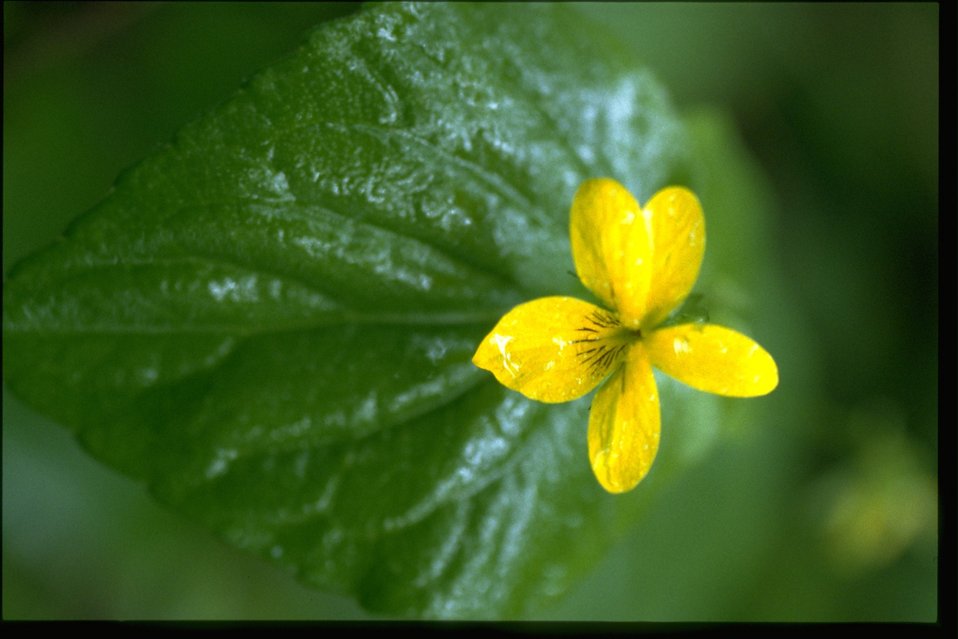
Closeup shot of stream violet (Viola glabella).